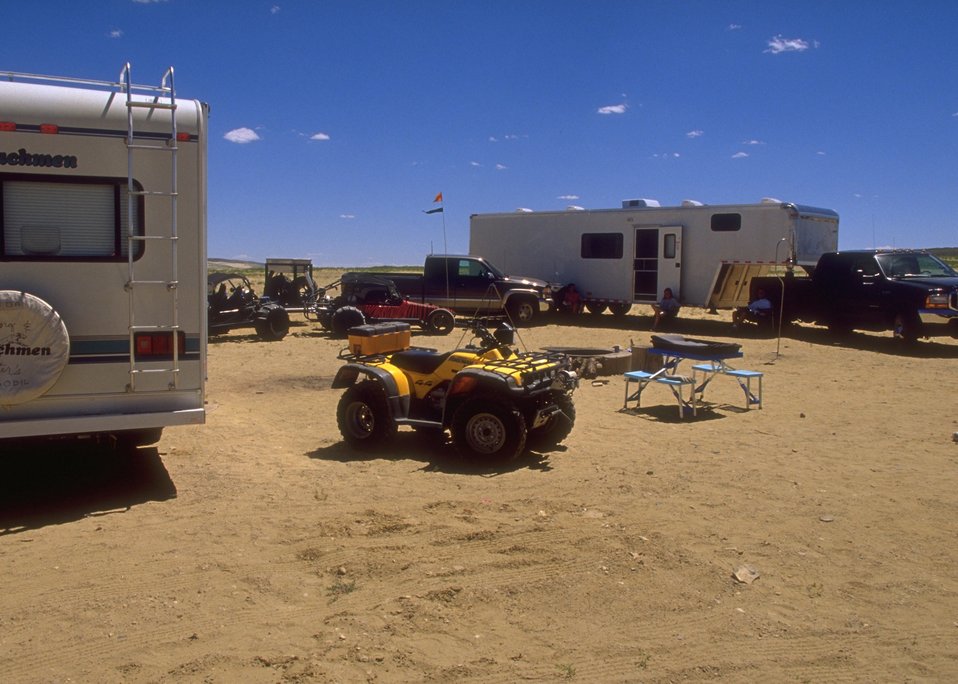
Camping at Sand Dunes OHV Area, Rock Springs Field Office.